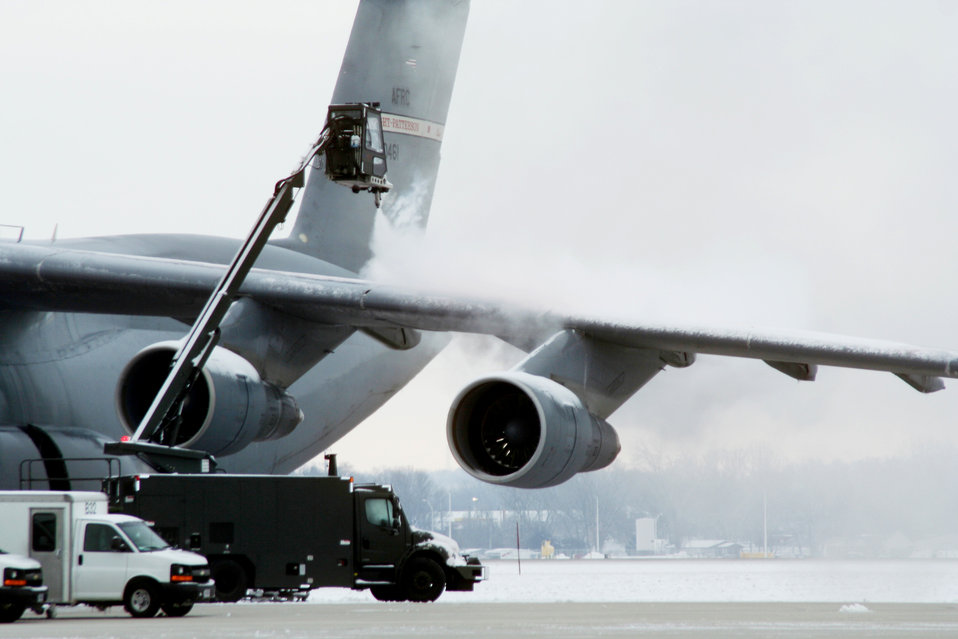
No more snow

Reservists from the 445th Aircraft Maintenance Squadron de-ice a C-5 Galaxy on a parking area at Wright-Patterson Air Force Base, Ohio, Feb. 7, 2010, after several inches of snow fell in the nearby Dayton area.